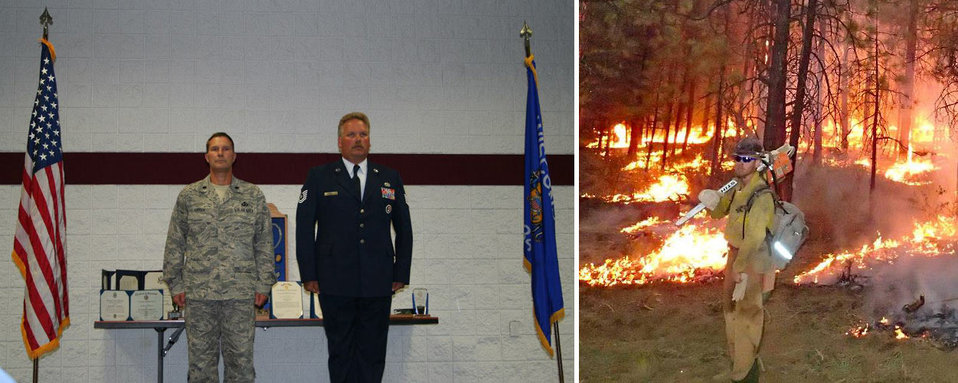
Robert Garrelts-Midwest Region

Robert Garrelts, a Maintenance Worker at Upper Mississippi River National Wildlife & Fish Refuge in Wisconsin, sent a photo of his retirement from the Air National Guard after 20 years. His son served in the Air Force and is now a Hot Shot Firefighter for the Jackson Hotshot crew in Mississippi for BLM. He volunteers in his off season at the Upper Mississippi River Refuge – Lacrosse District.